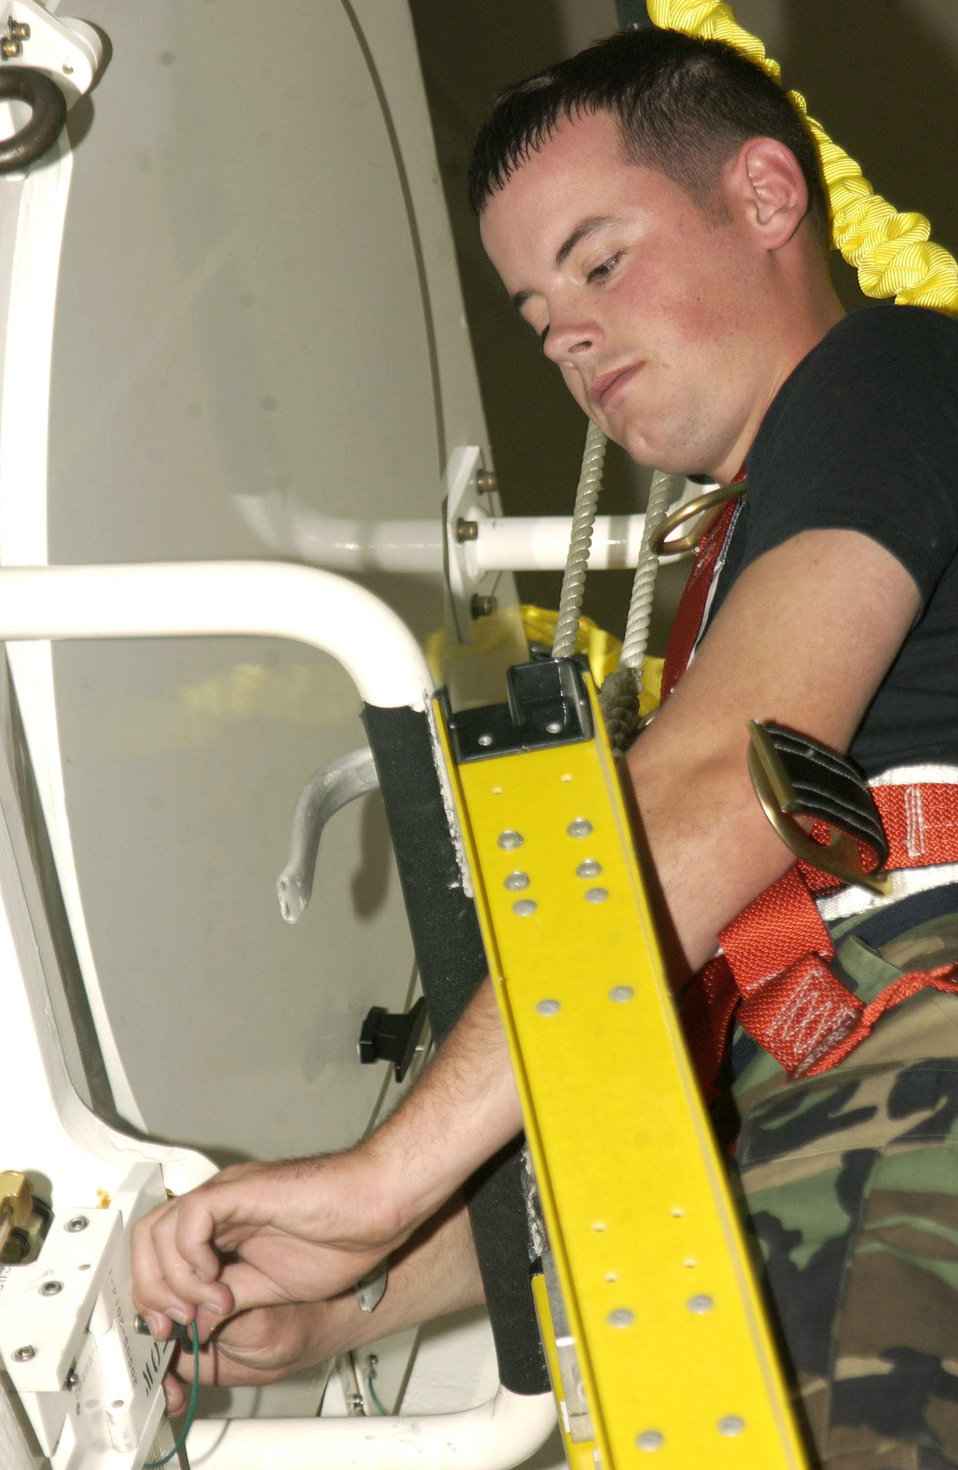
Maintaining radars

ORCUTT, Calif. -- Airman 1st Class Christopher Garret inserts an azimuth stow pen into the next generation weather radar located on New Love Hill here. Airman Garret is a ground radar systems maintenance technician assigned to the 30th Space Communications Squadron at Vandenberg Air Force Base, Calif.